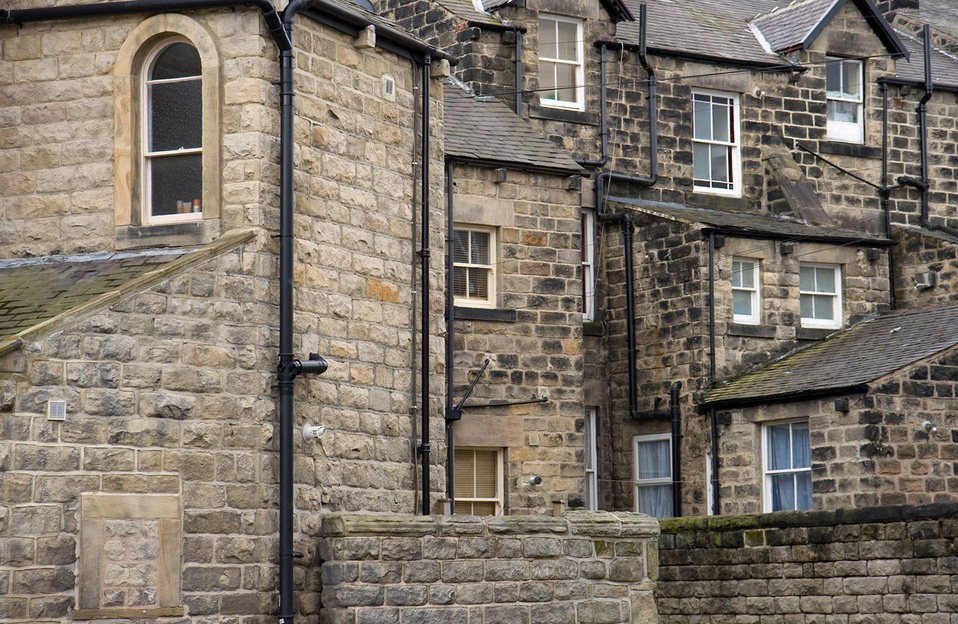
Walls and windows

Stone walls with windows.